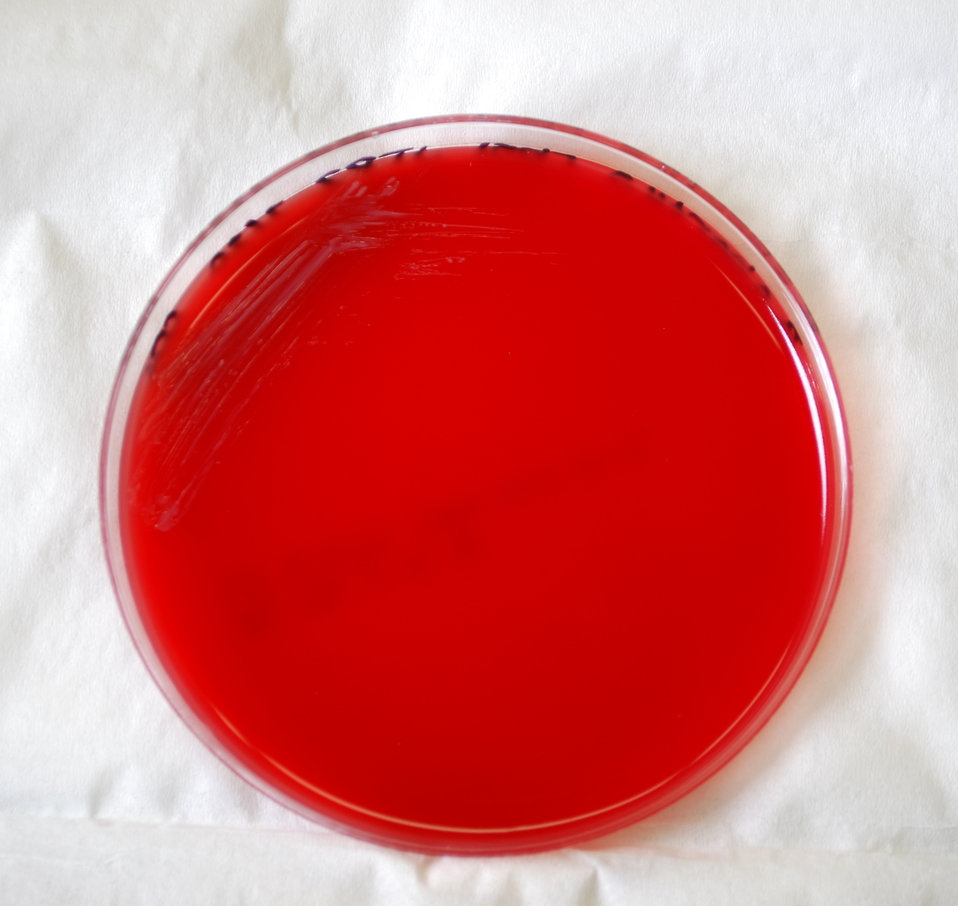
This photograph depicts the colonial morphology displayed by Gram-negative Brucella abortus bacteria, which was grown on a medium of sheep's blood agar (SBA), for a 24 hour time period, at a temperature of 37�C. This Petri dish and its contents were incubated in a CO2 incubator. For a closer view, see PHIL 12204.